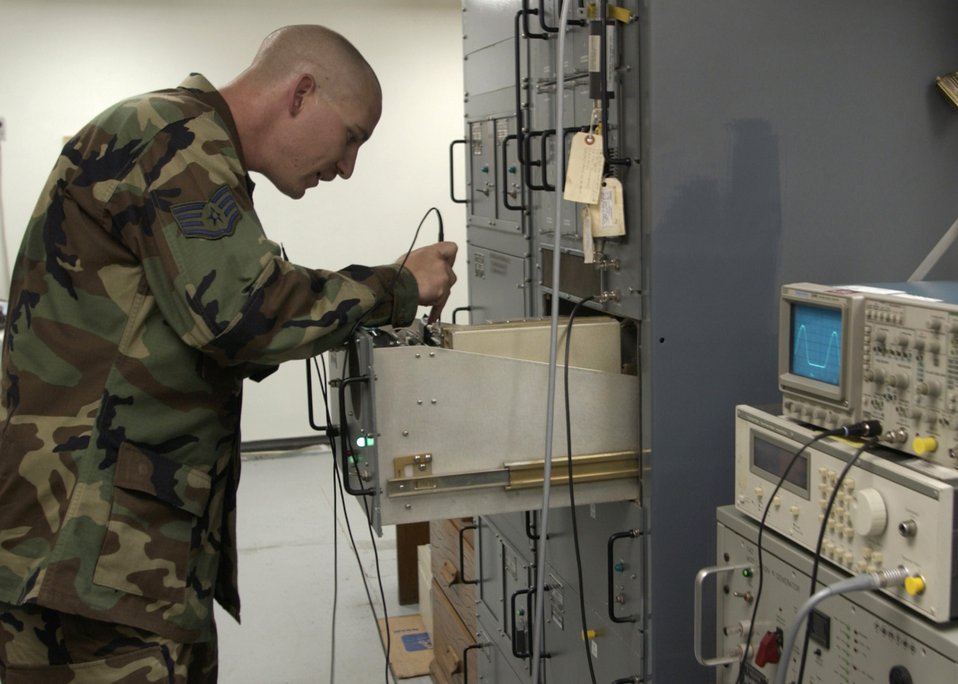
Airmen keep Soto Cano's runway running

SOTO CANO AIR BASE, Honduras -- Staff Sgt. Charles Heairet checks radar equipment here. He and other technicians maintain and repair all meteorological and navigational systems to ensure the base runway stays open for Joint Task Force-Bravo counterdrug and humanitarian support operations. Sergeant Heairet is a meteorological and navigational aid systems technician.